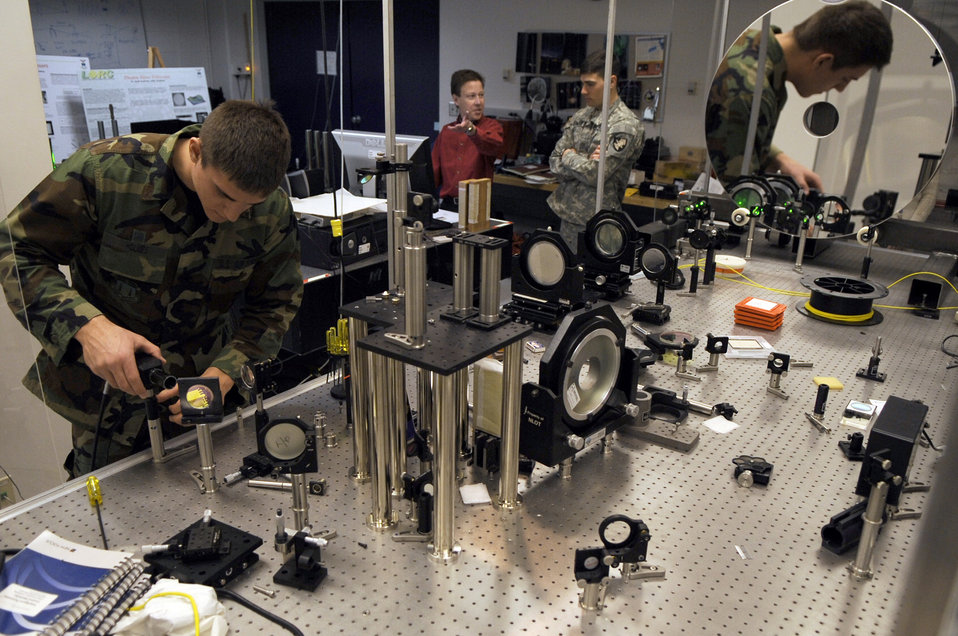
Academy researcher develops satellite imaging technology

U.S. Air Force Academy Cadet Will Holmes conducts holographic adaptics optics research with U.S. Military Academy Cadet Richard Carter and Dr. Geoff Andersen Jan. 22 at the Academy in Colorado. Dr. Andersen is a research associate, teaches cadets and conducts experiments at the Laser and Optics Research Center. Cadet Carter is a junior in a exchange unit from West Point and Cadet Holmes is a senior at the Academy.